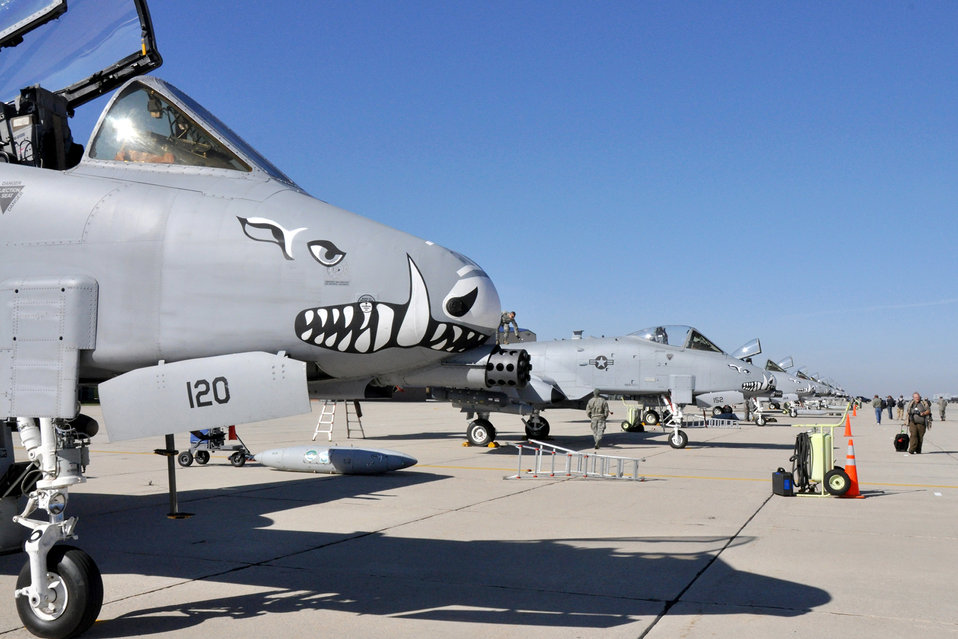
Hawgsmoke 2010

A group of A-10 Thunderbolt IIs sit on the ramp Oct. 13, 2010, at Gowen Field in Boise, Idaho. The A-10s are assigned to the Air Force Reserve Command's 47th Fighter Squadron from Barksdale Air Force Base, La.